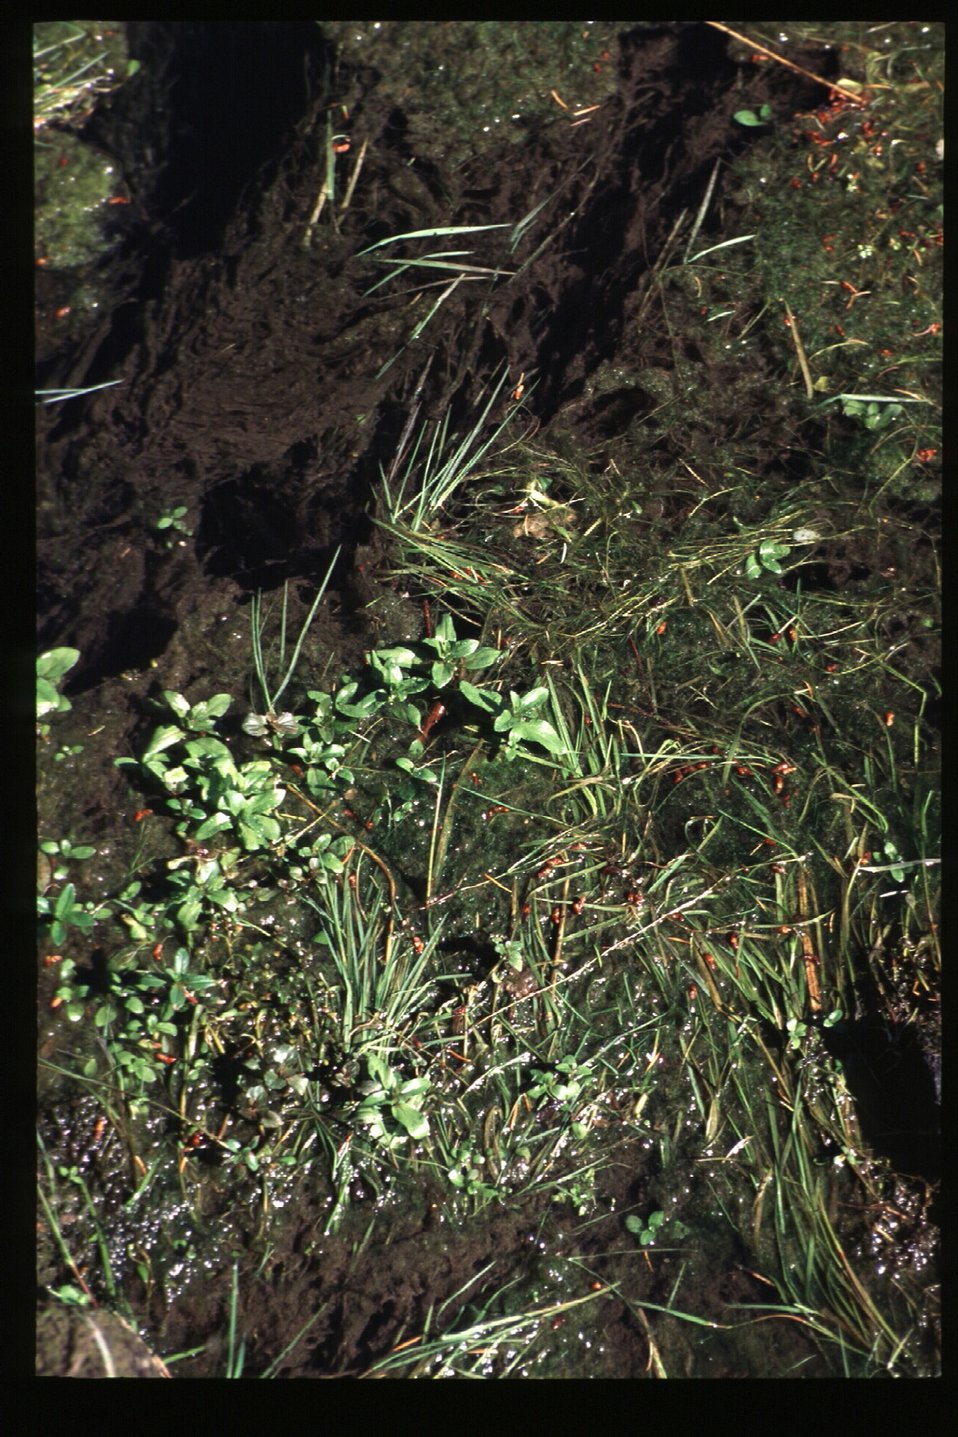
Scenic and recreation South Snake River Cress in Creek Joe Bressler Camp USRD Upper Snake River District